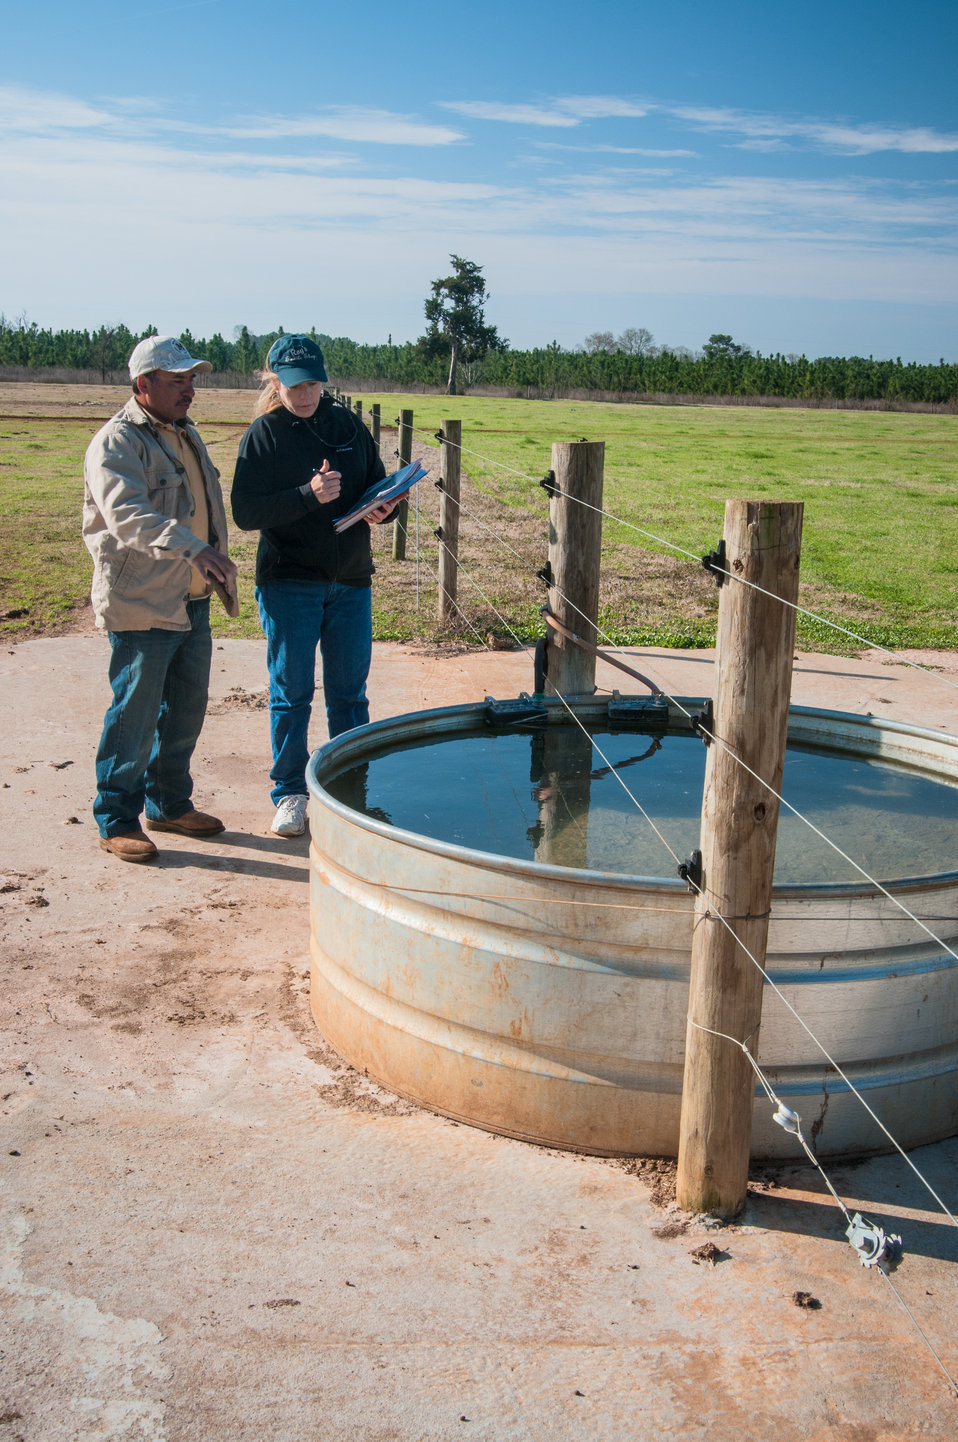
Banamacc Farms owner Raul Moreno and U.S. Department of Agriculture (USDA) National Resources Conservation Service (NRCS) Soil Conservation Technician Lynne Roney review Moreno's conservation plan for a heavy use area around a watering trough in his pasture in Edison, Calhoun County, GA on Mar. 7, 2013. Moreno was able to secure funding for the improvements with a USDA NRCS Environmental Quality Incentive Program (EQIP) contract. Moreno mentioned, “NRCS provided me with specifications and designs that assisted me in installing conservation practices that will last for many years to come.” The USDA Strike Force Initiative has designated Calhoun County, GA as a Strike Force county selected to receive assistance to relieve persistent poverty in historically high-poverty counties.